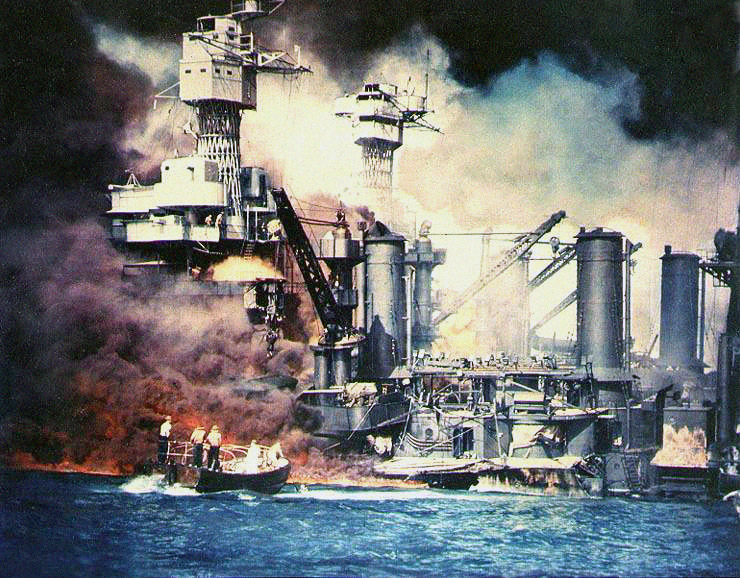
Spirited remembrance; Stealth bomber visits Pearl Harbor

Sailors in a motor launch rescue a survivor from the water alongside the sunken West Virginia during or shortly after the Japanese air raid Dec. 7, 1941, at Pearl Harbor.